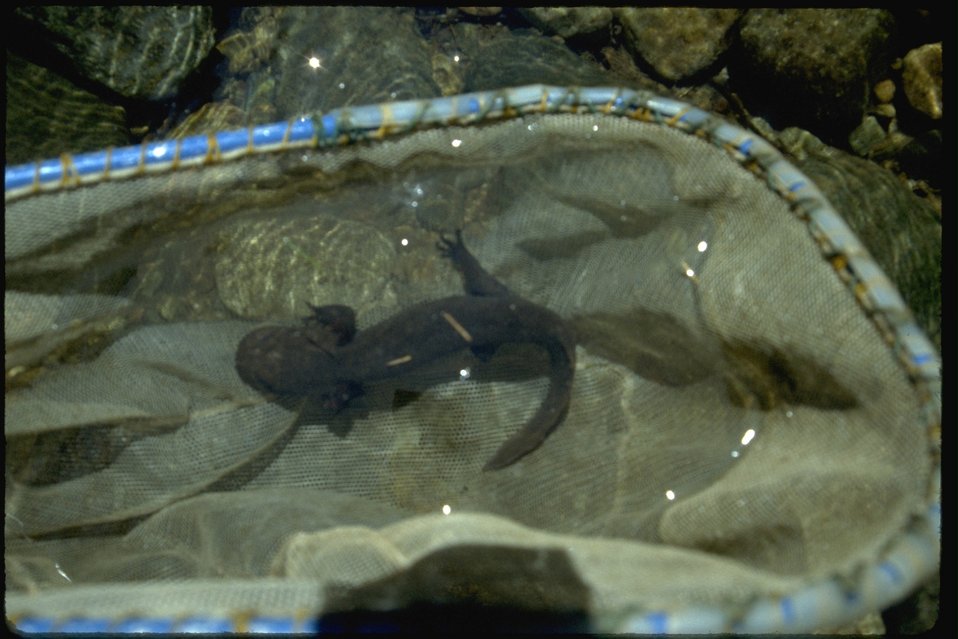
Giant salamander in net.